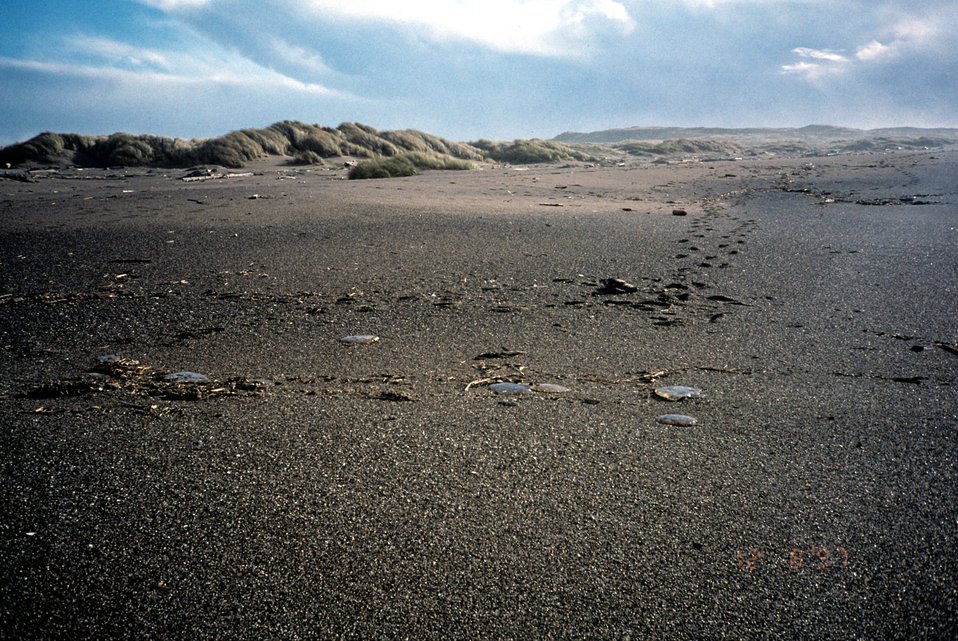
Point Reyes Great Beach south end. Jellyfish and other flotsam litter the beach below the dunes.